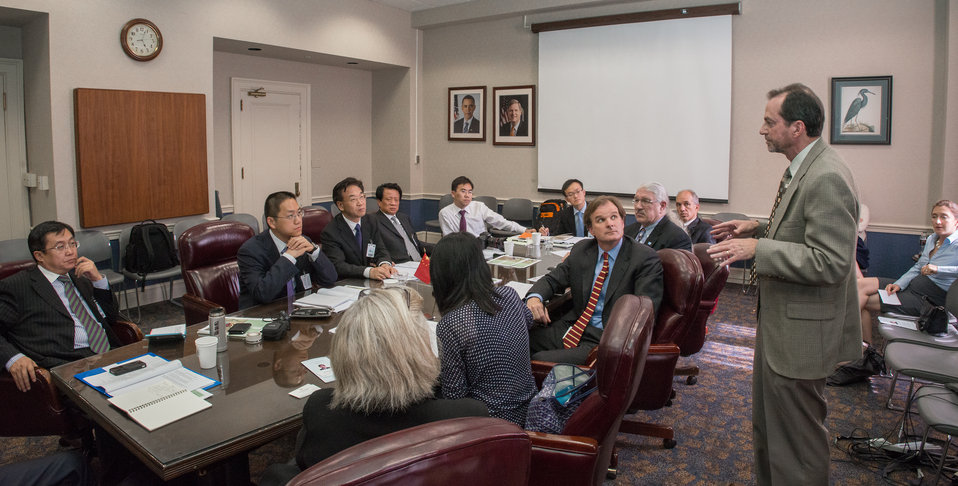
U.S. Department of Agriculture (USDA) Natural Resources Conservation Service (NRCS) Science and Technology Deputy Chief C. Wayne Honeycutt, Ph.D., stands to answer a question from The People’s Republic of China Ministry of Agriculture (MOA) Vice Minister H.E. Zhang Taolin who heads the Chinese Agricultural Delegation and the USDA Under Secretary for Natural Resources and Environment (NRE) Robert Bonnie and representatives from NRCS OCE and FS meet at the USDA headquarters Whitten Building, in Washington, D.C., on Friday June 13, 2014.